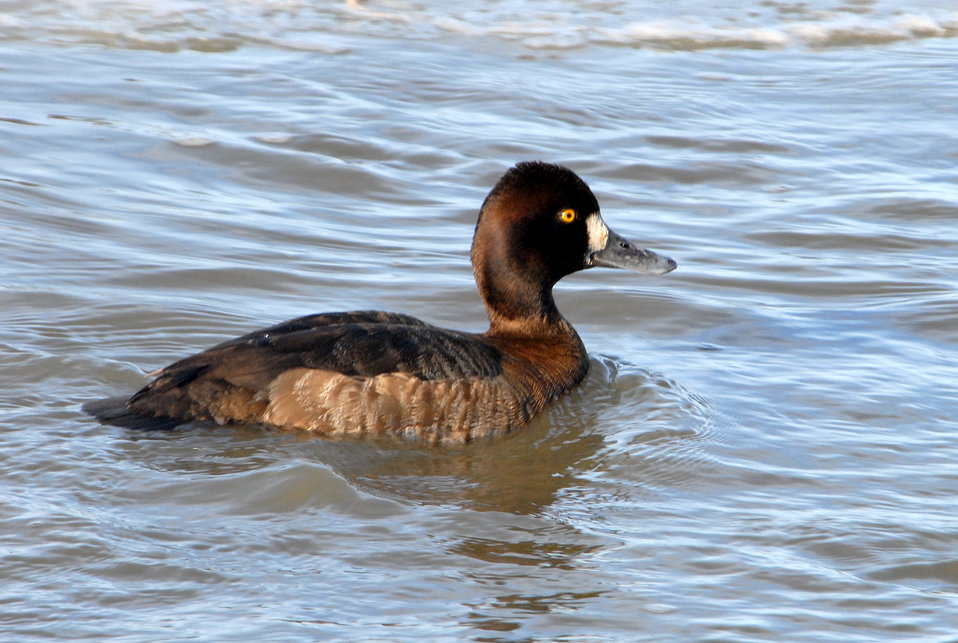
Lesser Scaup (female)